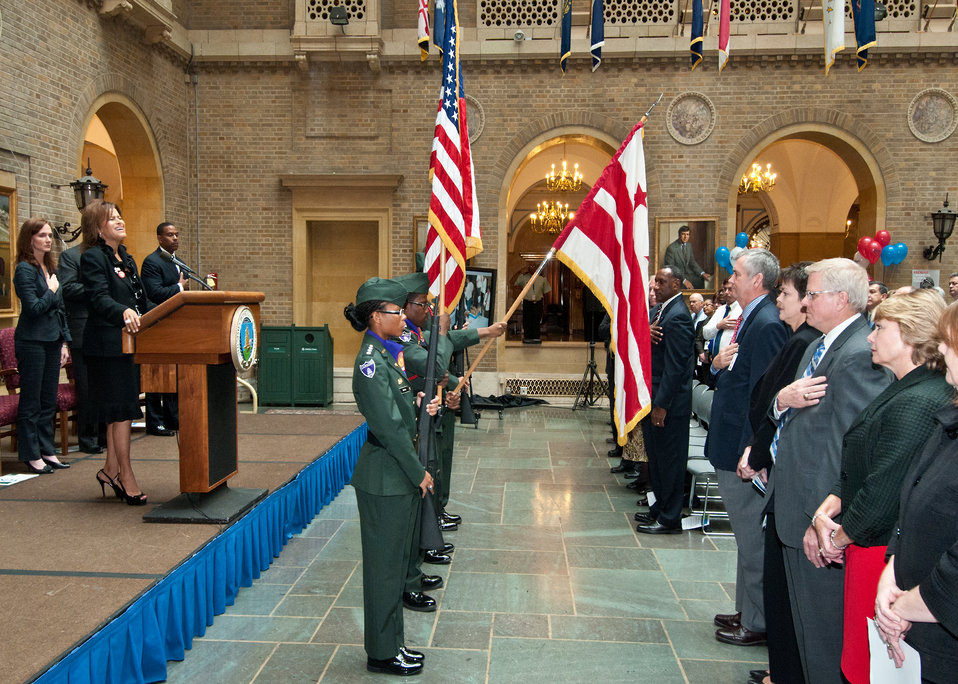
Renee Allen, Office of Executive Services U.S. Department of Agriculture, sings the National Anthem with the colors offered by the JROTC from Cardozo High School, Washington, DC, at the kick-off of the U.S. Department of Agriculture 2011 Combined Federal Campaign “Compassion of Individuals, Power of Community” at the USDA in Washington, DC, on Wednesday, September 21, 2011. The theme of the 2011 campaign is “Celebrating 50 Years of Caring, Serving and Giving.”